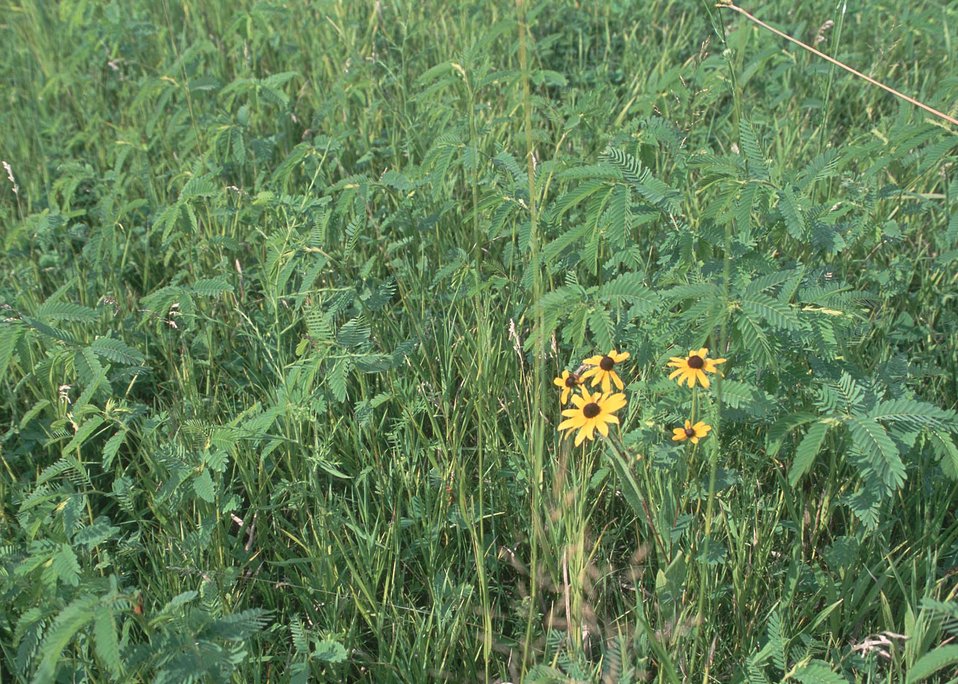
Partridge pea and short grasses are excellent habitat for quail and songbirds.